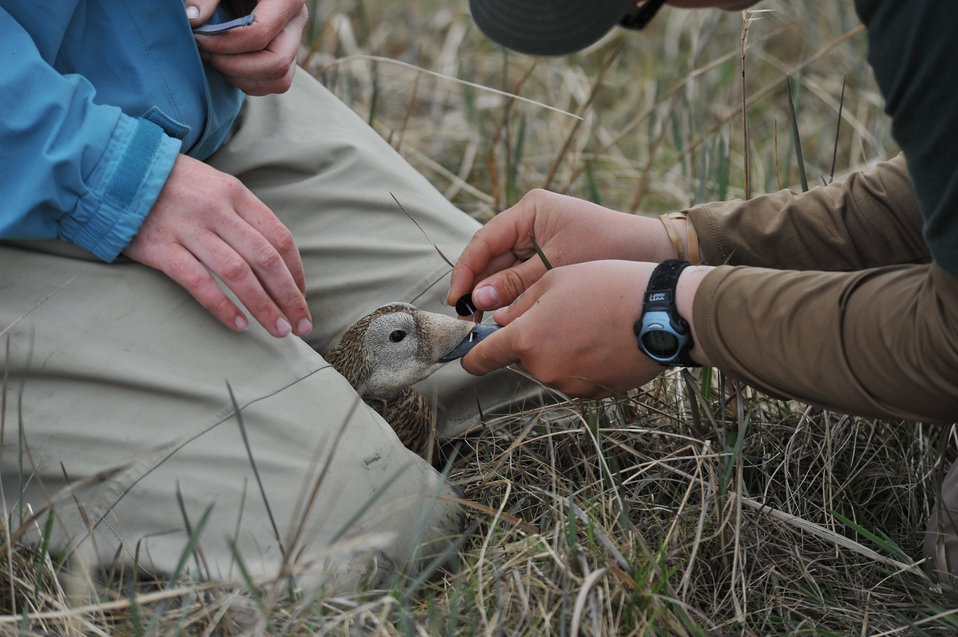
Nasal Disc Application

Nasal discs are a type of marker that are helpful when resighting nesting females. Since spectacled eiders are sitting on their nest, incubating, the tarsal bands are not visible. Nasal discs allow for researchers to ID the female without disturbing the female during incubation.

USFWS Yukon Delta NWR